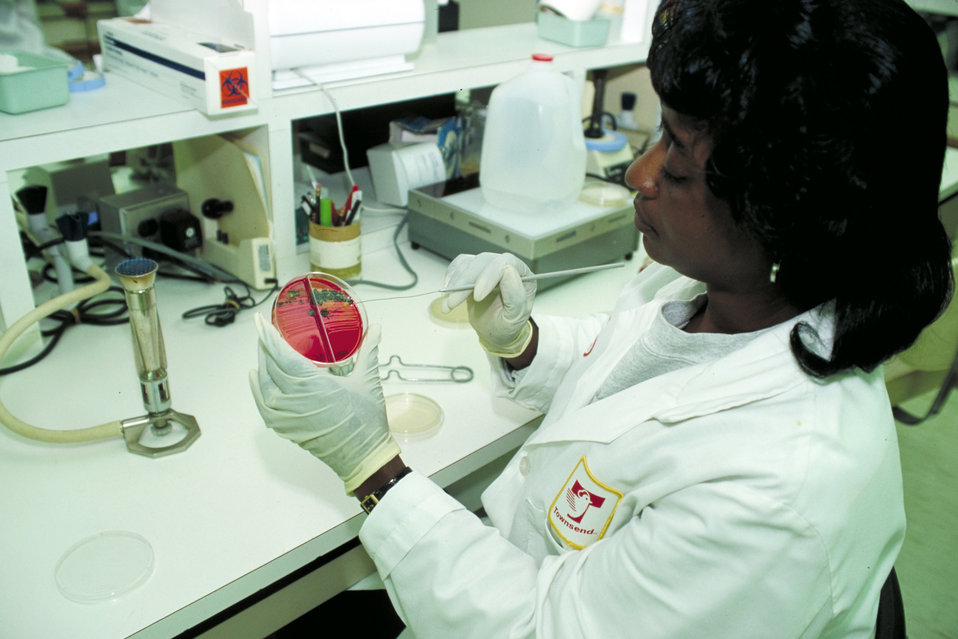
Plant scientist conducts a microbiological test for the presence of specific pathogenic microorganisms in or on the product as part of the facility’s compliance with the U.S. Department of Agriculture’s (USDA) Food Safety Inspection Service (FSIS) plan on May 13, 1996.